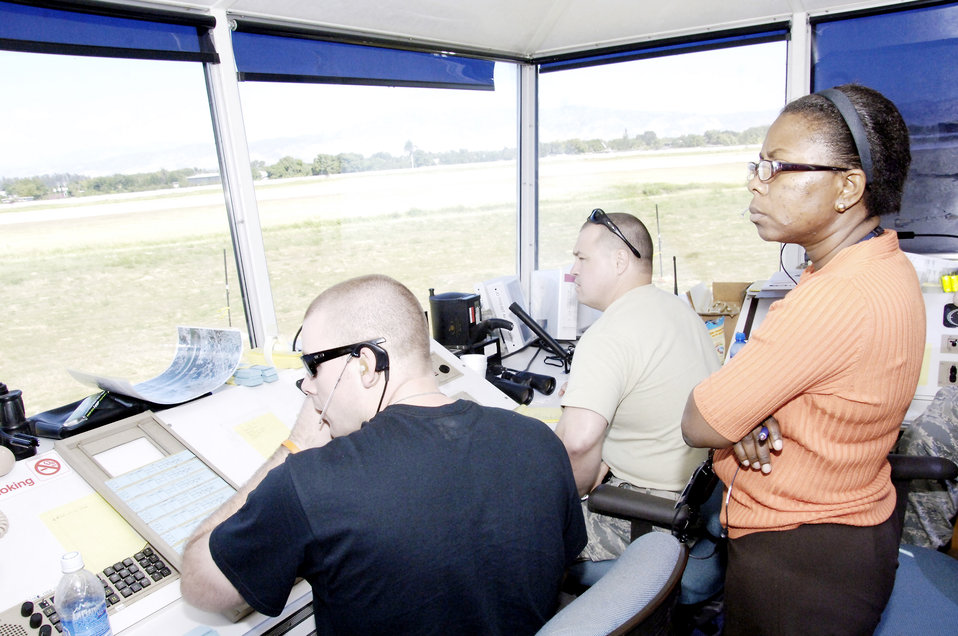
Transition to return tower to Haitian controllers begins

Nadia Adma observes tower operations from Tech. Sgt. Robert Stewart (left) and Tech. Sgt. Jerry Scurlock (right) Feb. 2, 2010, at the airport in Port-au-Prince, Haiti. Haitian controllers will observe the Air Force controllers for two weeks and then the Haitian controllers will run the tower with the Air Force as advisers until they feel comfortable taking over flight responsibilities. Ms. Adma is a Haitian air traffic controller. Sergeants Stewart is assigned to the 260th Air Traffic Control Squadron. Sergeant Scurlock is assigned to the 258th ATCS.